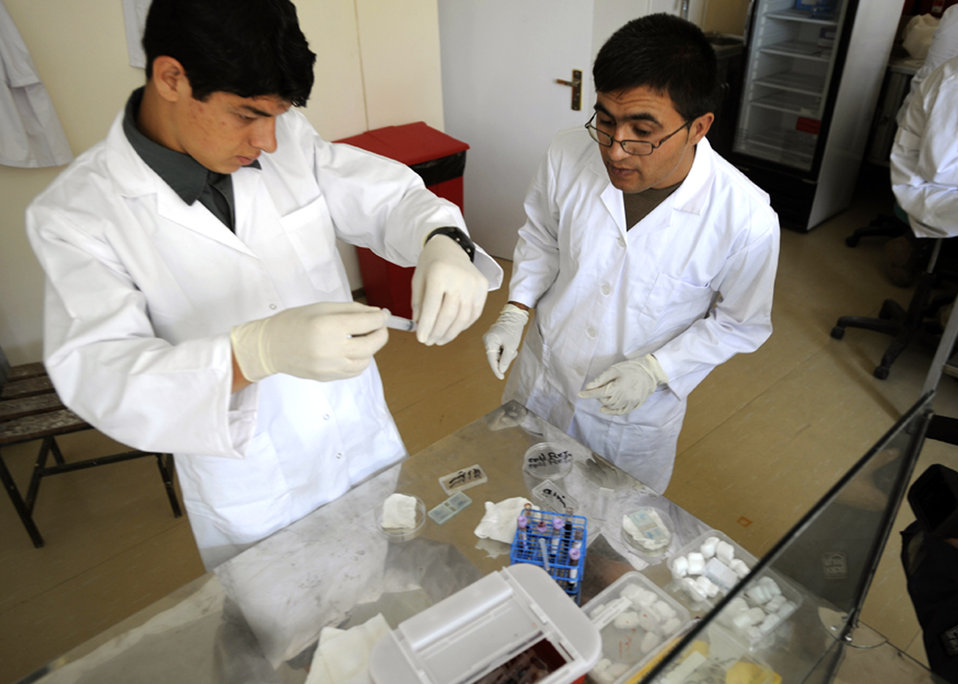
Afghan medical technicians learn lab techniques

Afghan medical students practice laboratory techniques Aug. 3, 2009 at the Kabul national military hospital in Kabul, Afghanistan.